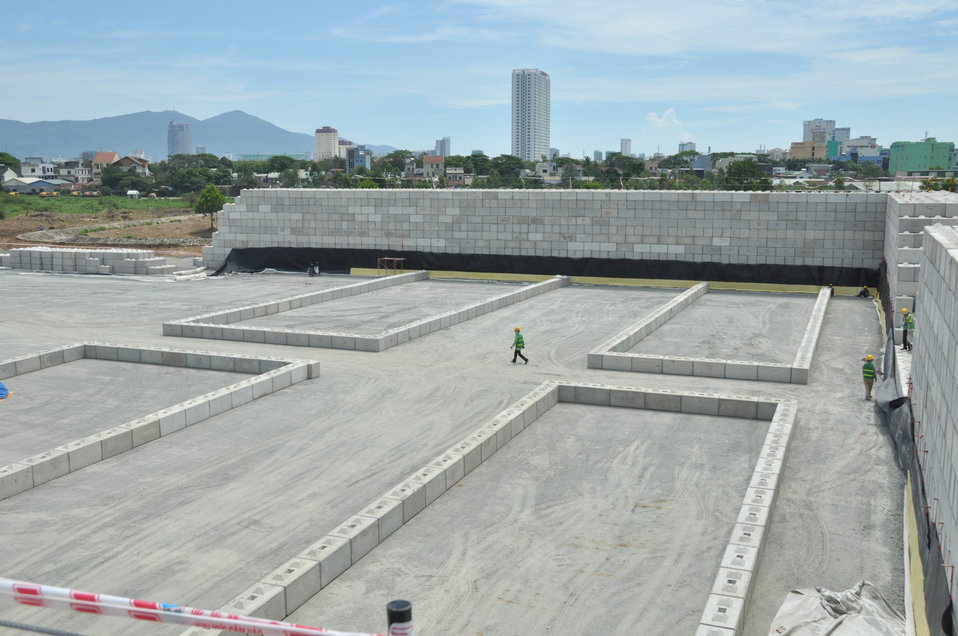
Site construction at the Environmental Remediation of Dioxin Contamination at Danang Airport

Progress at the Danang Airport remediation site
April 23, 2013